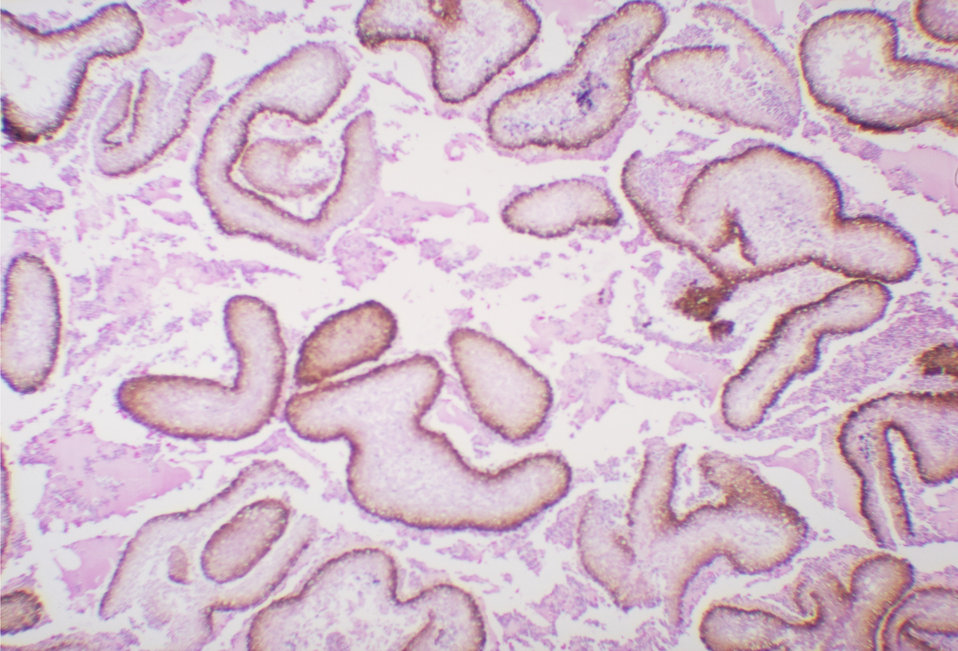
This was a case of black grain eumycotic mycetoma of subcutaneous tissue due to the fungus Curvularia geniculata.